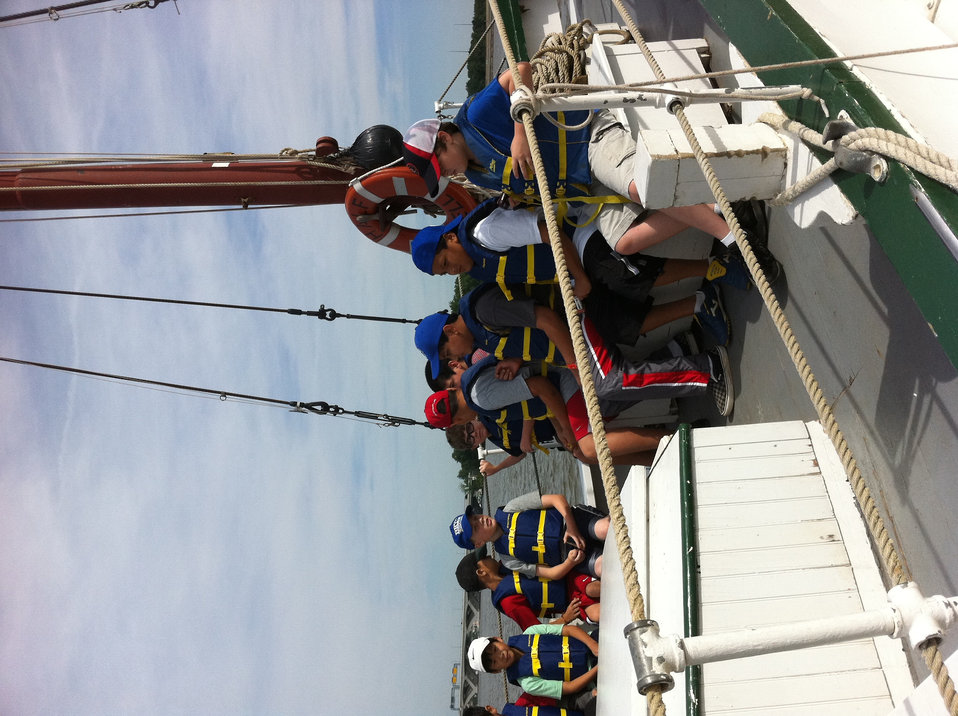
Let's go fishing! Kids on the boat ready to go!